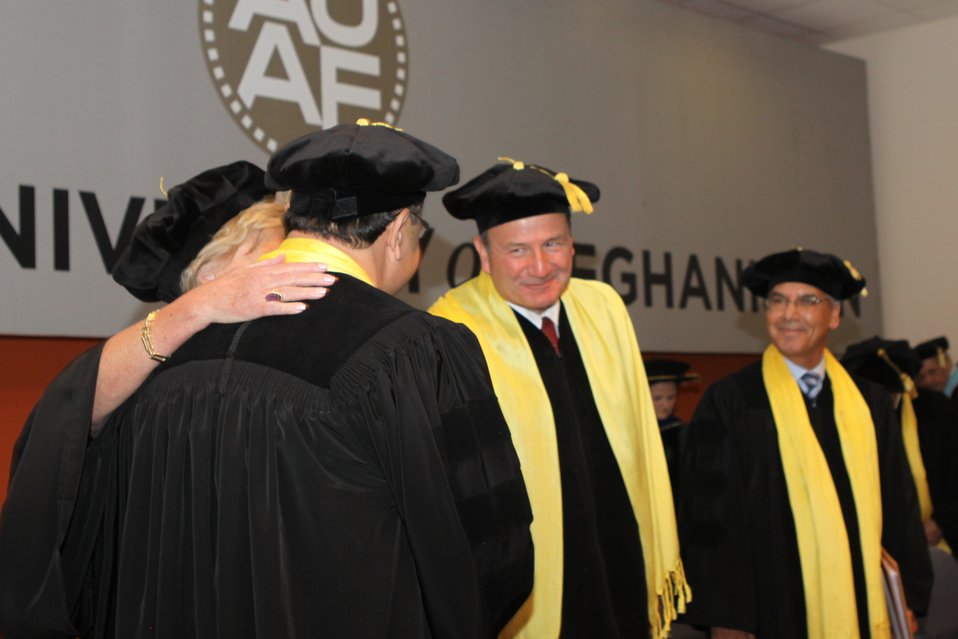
100526 AUAF Graduation 121